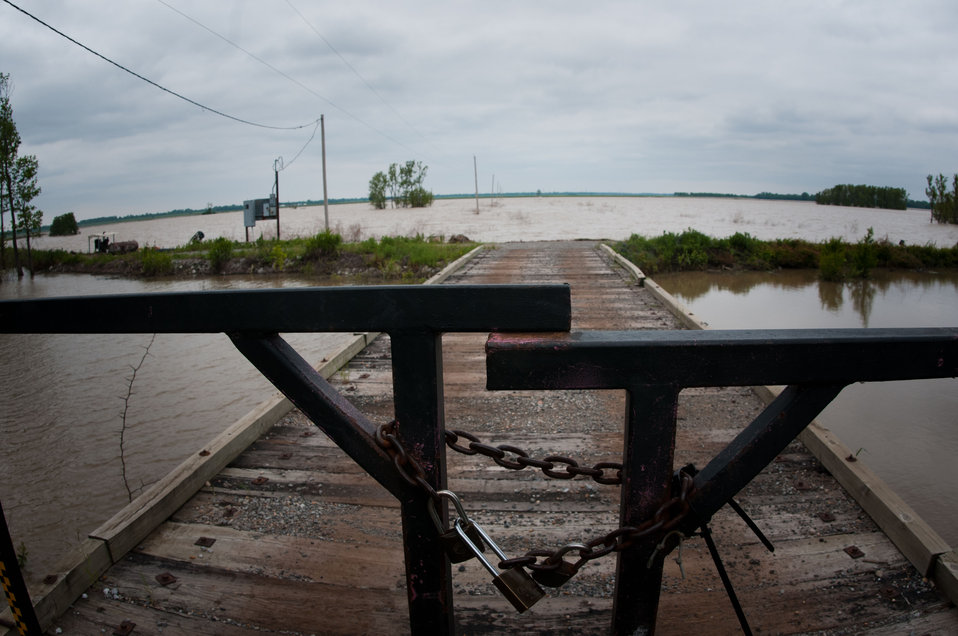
Floods waters from Mississippi River inundated casinos and farms that surround Tunica, MS, on Sunday, May 15. 2011.